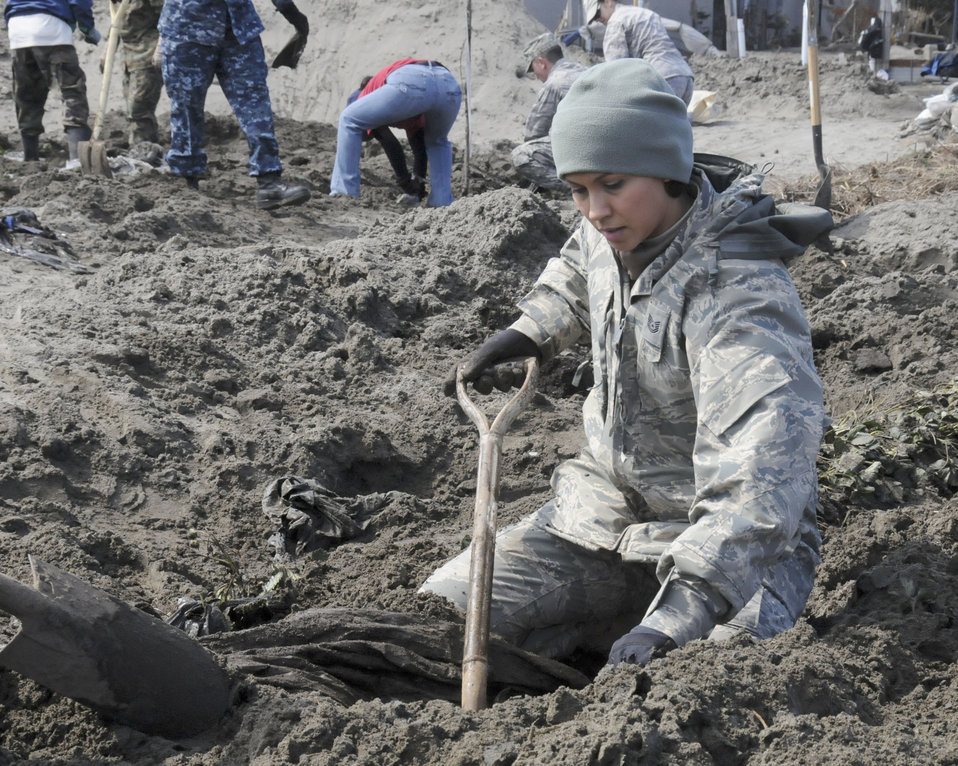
Misawa helps

An Airman digs through a strawberry field, looking for debris April 1, 2011, in Hachinohe, Japan.